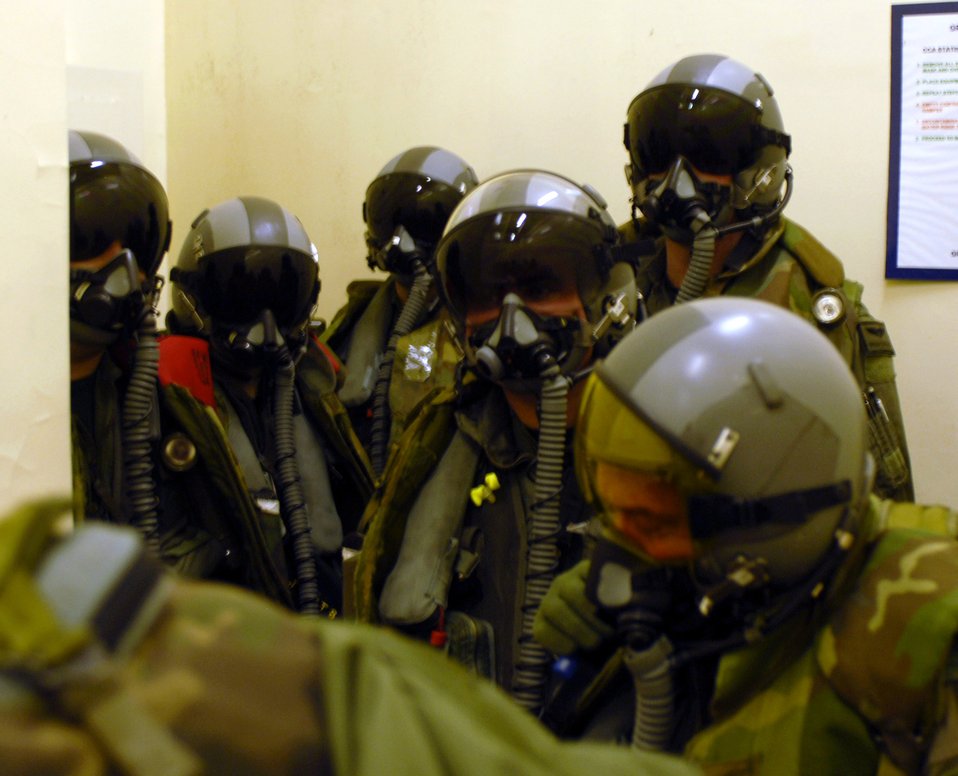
Testing readiness at Kunsan

Pilots with the 80th Fighter Squadron stand by prior to going to their F-16 Fighting Falcons during the Peninsula Operational Readiness Exercise Nov. 6 at Kunsan Air Base, South Korea. The exercise tests the wing's ability to train and work in real-world situations.